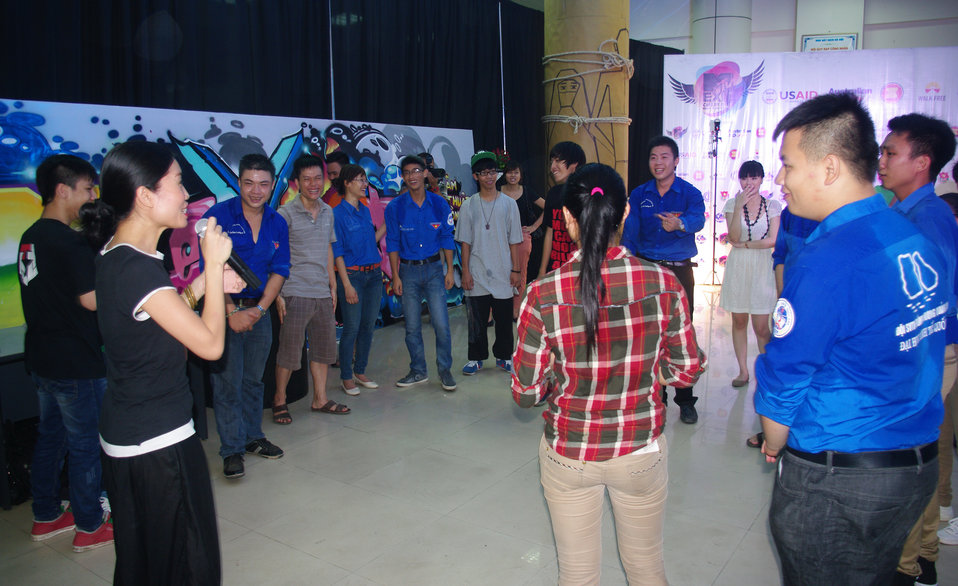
MTV EXIT opens Youth Forum in Hanoi